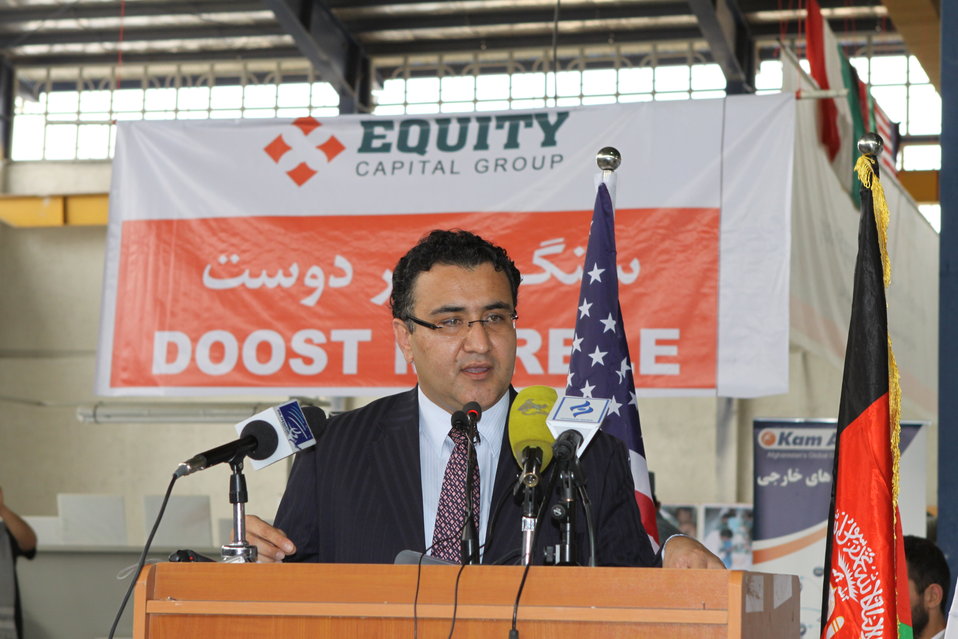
100525 Hirat Marble Conference 195